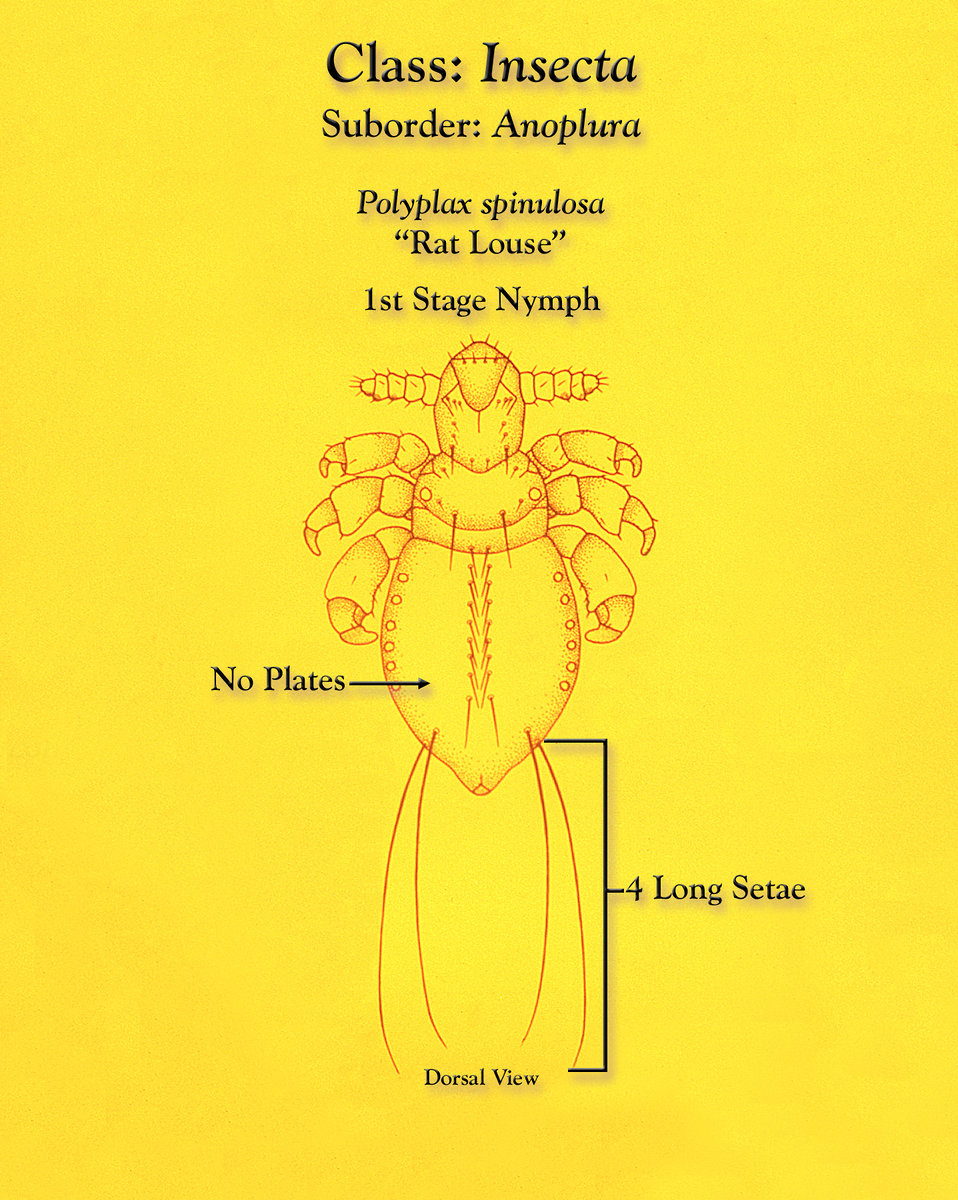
This illustration depicts the morphologic characteristics found to be displayed by Anopleural sucking lice members of the genus Polyplax during their first nymphal stage.